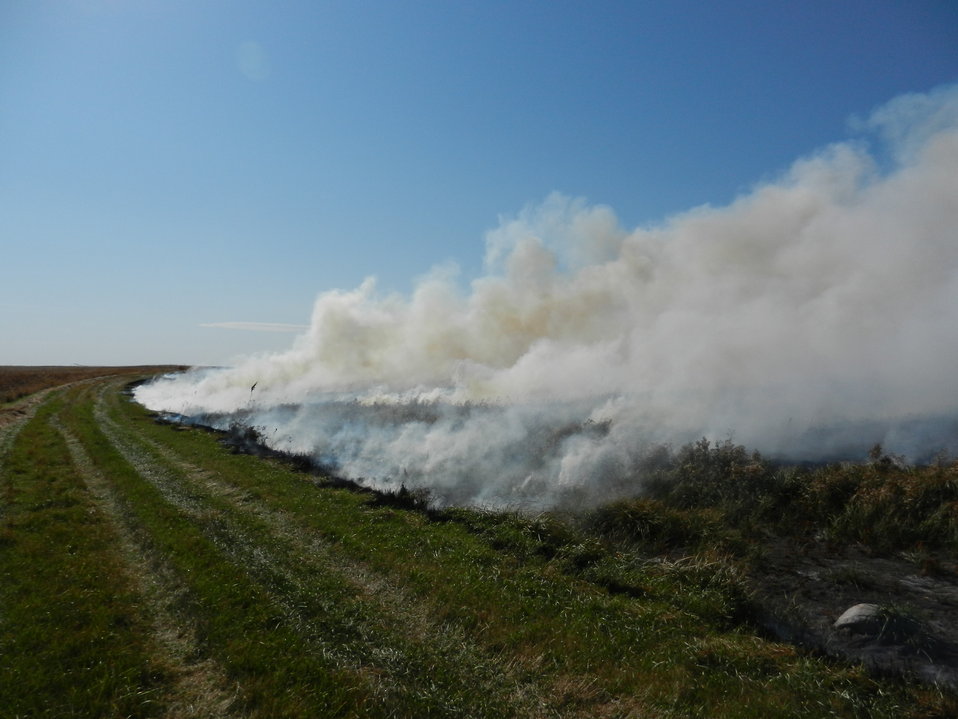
Fall Prescribed Burning on Des Lacs Refuge